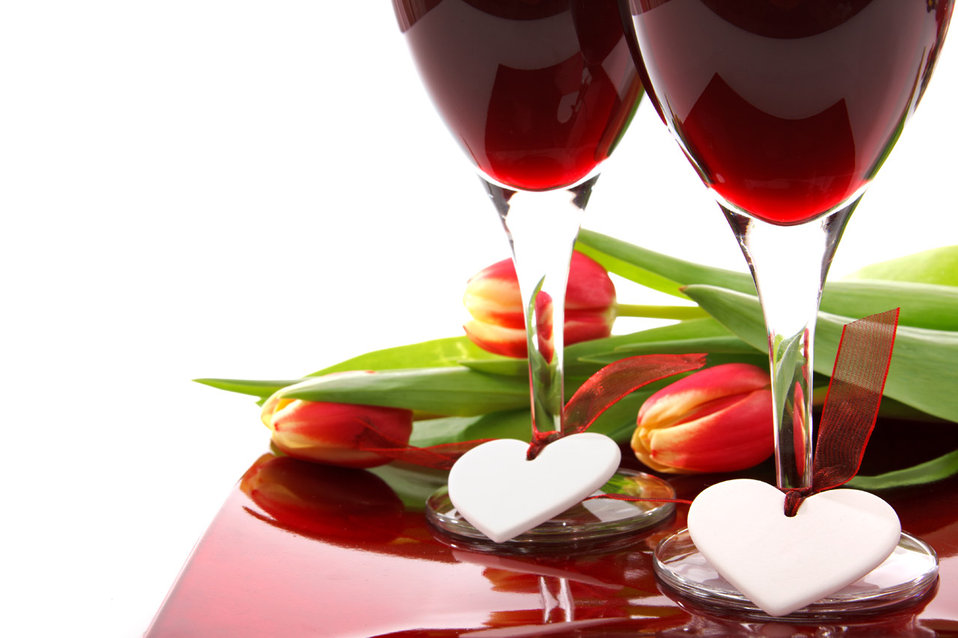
Valentine decoration with two glasses of wine, white hearts and colorful tulips on white background.